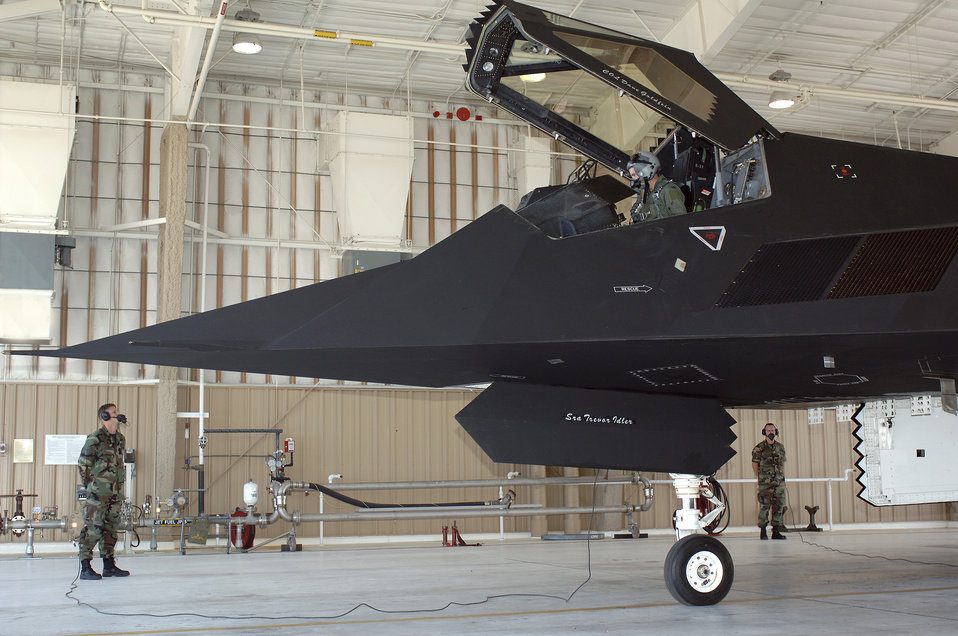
Flight commemorates 250,000 hours for Nighthawks

Col. John Forsythe makes final checks with Staff Sgt. Kasey Lynch (left) and Senior Airman Trevor Idler before departing on a special flight July 25th at Holloman Air Force Base New Mexico. The flight was commemorating 250,000 hours of operation by F-117 Nighthawks. Colonel Forsythe is the 49th Operations Group commander. Sergeant Lynch and Airman Idler are crew chiefs assigned to the 49th Fighter Wing.